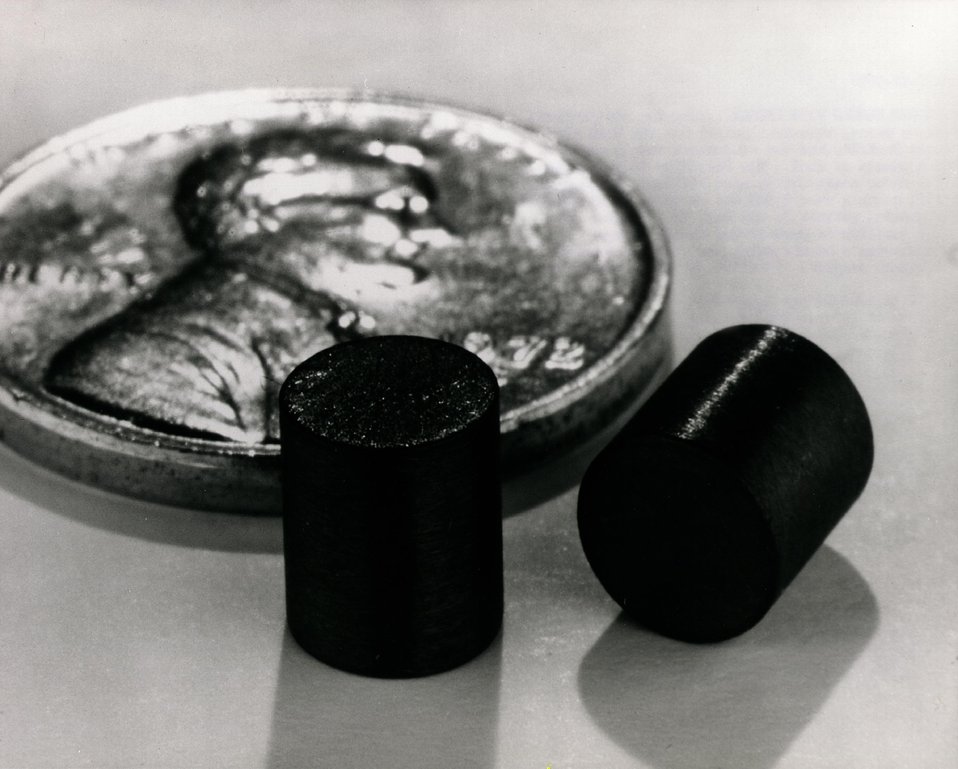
Weighing one-fortieth of an ounce, this fuel pellet for the Fast Flux Test Facility has the equivalent energy value of 566 pounds of coal. c. 1972.